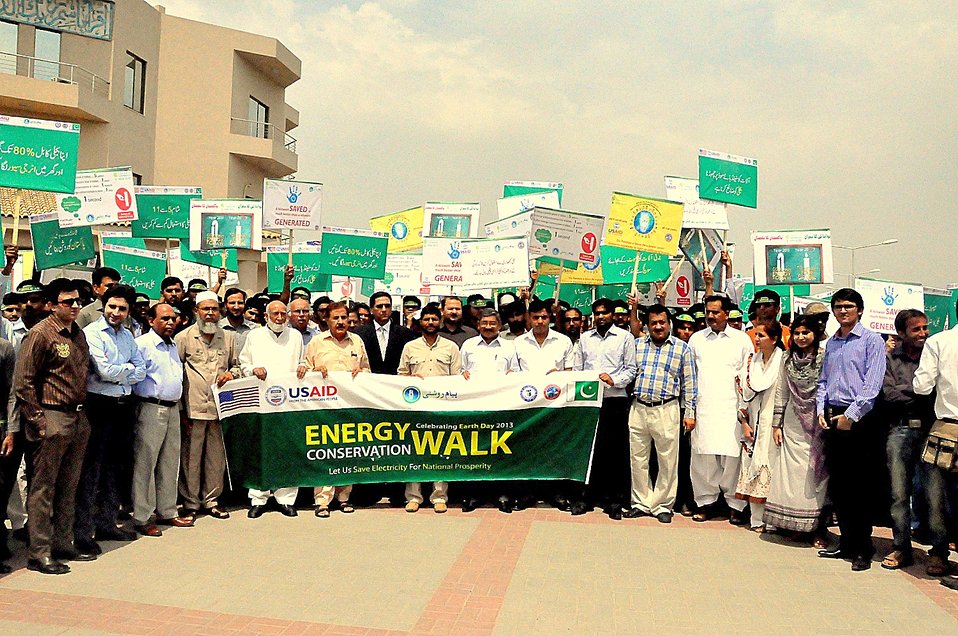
USAID celebrates Earth Day 2013

MEPCO senior management at the starting line of the walk route.